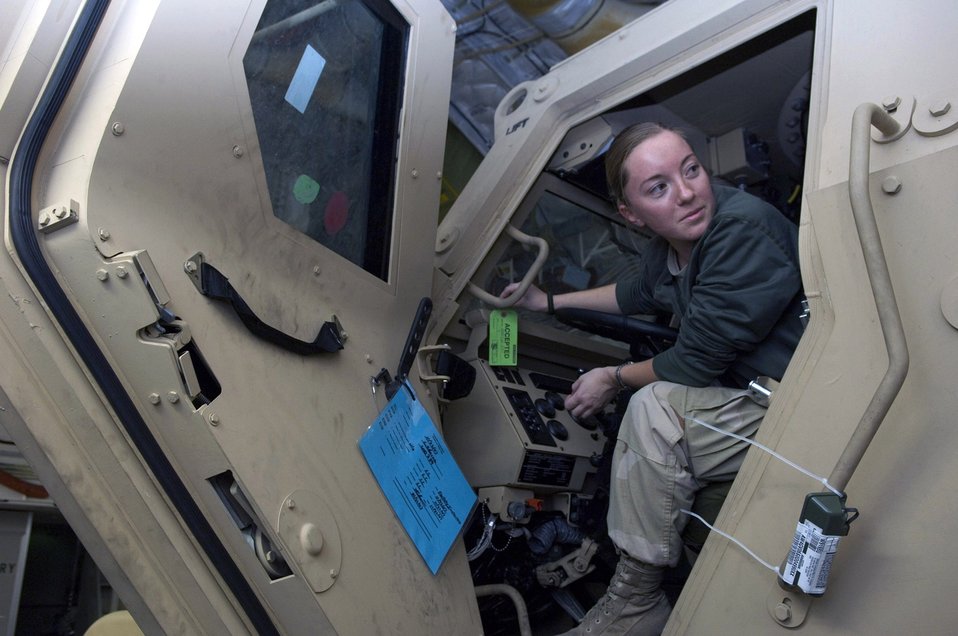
Balad aerial port bests cargo movement record

Senior Airman Christine Mirgon takes a quick look behind her as she loads a new mine resistant ambush protected vehicle on to a C-17 Globemaster III on the flightline Dec. 8 at Balad Air Base, Iraq. Airman Putrino and other aerial port team members broke the single-day cargo-movement record Dec. 6 here by moving more than 400 tons of cargo. Airman Mirgon is a 332nd Expeditionary Logistics Readiness Squadron member deployed from Offut Air Force Base, Neb.